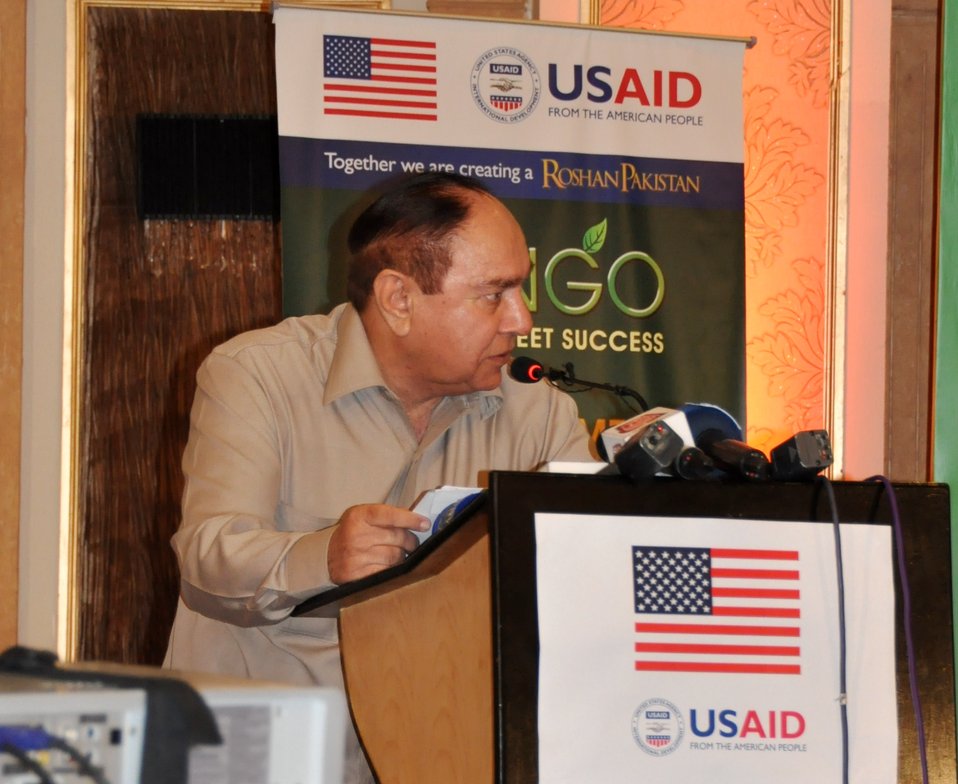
Mango Conference